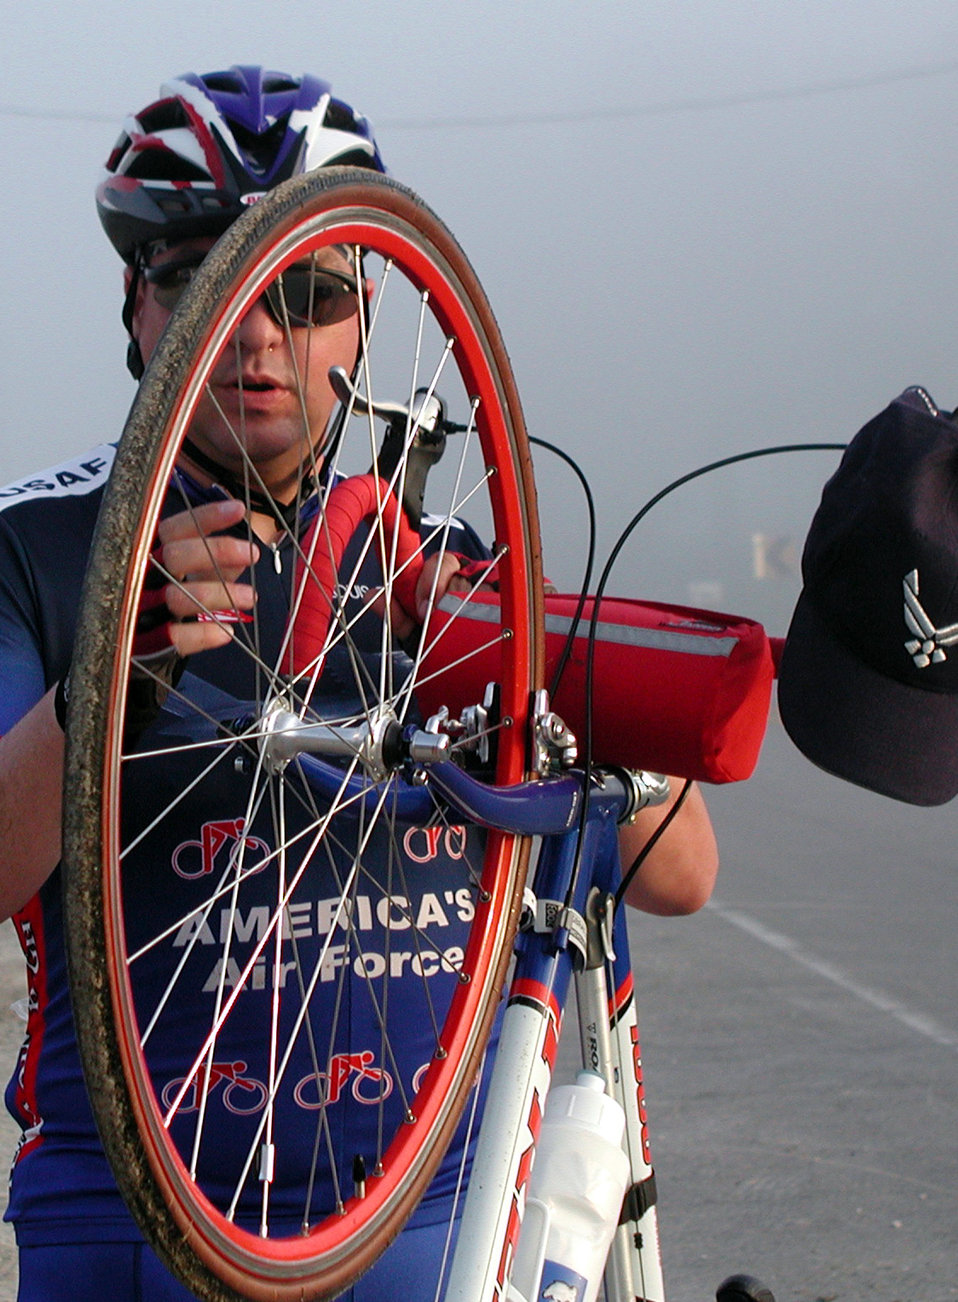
Biking across Iowa

WESTERN IOWA -- Tech. Sgt. Dennis Wermers checks his front-wheel spokes on the road to Shenandoah, Iowa. Wermers is stationed at Offut Air Force Base, Neb. He joined 90 other Air Force cyclists for the 450-mile, seven-day Des Moines Register's Annual Great Bike Ride Across Iowa.